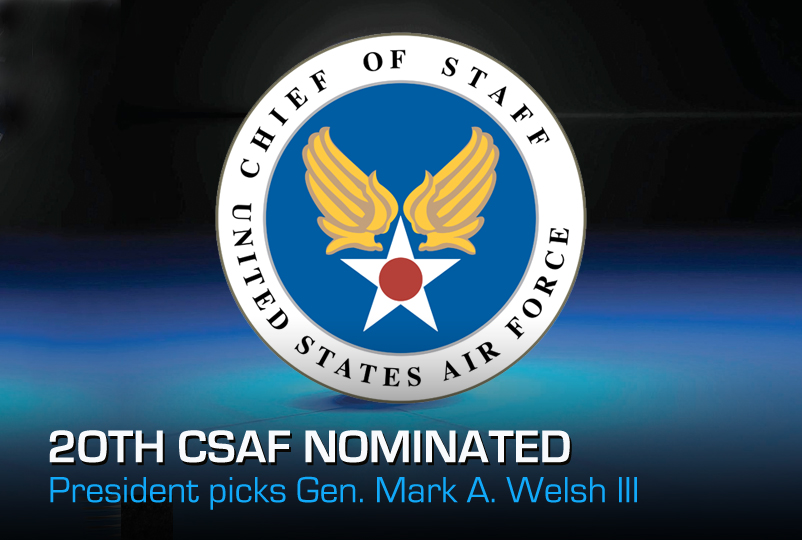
20th CSAF Nominated